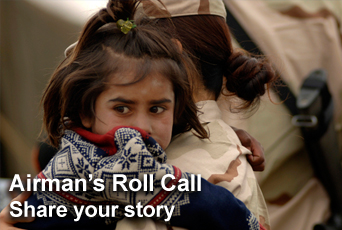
Airman's Roll Call

This week's Airman's Roll Call focuses on the opportunity every Airman has to share his or her stories and experiences and to give a first-hand account of the Air Force mission while spending time with family and friends during the holiday season.